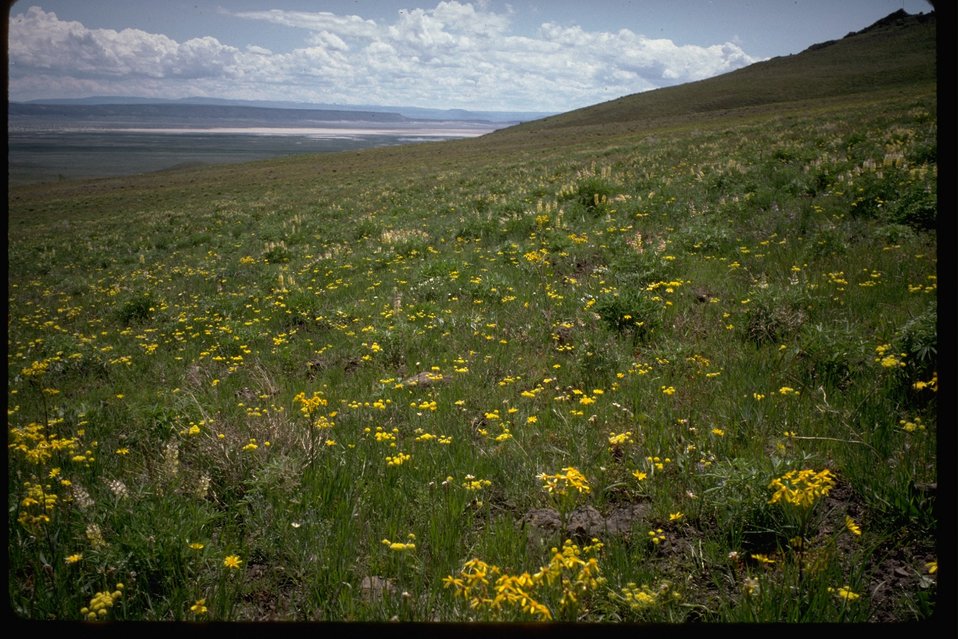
After a fire, a lush spring growth of grasses and forbs in the South Steens area.